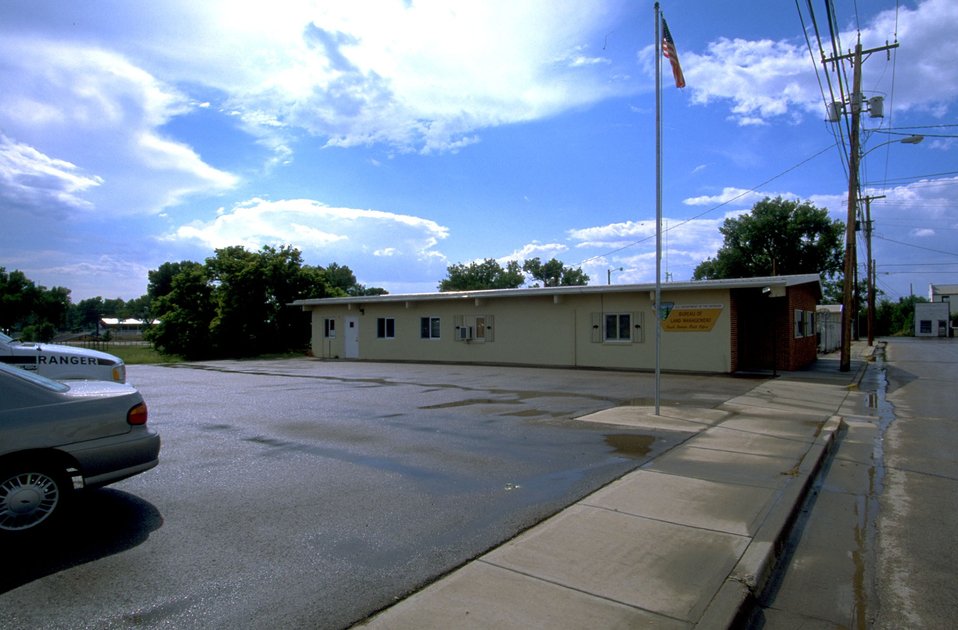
South Dakota Field Office looking west